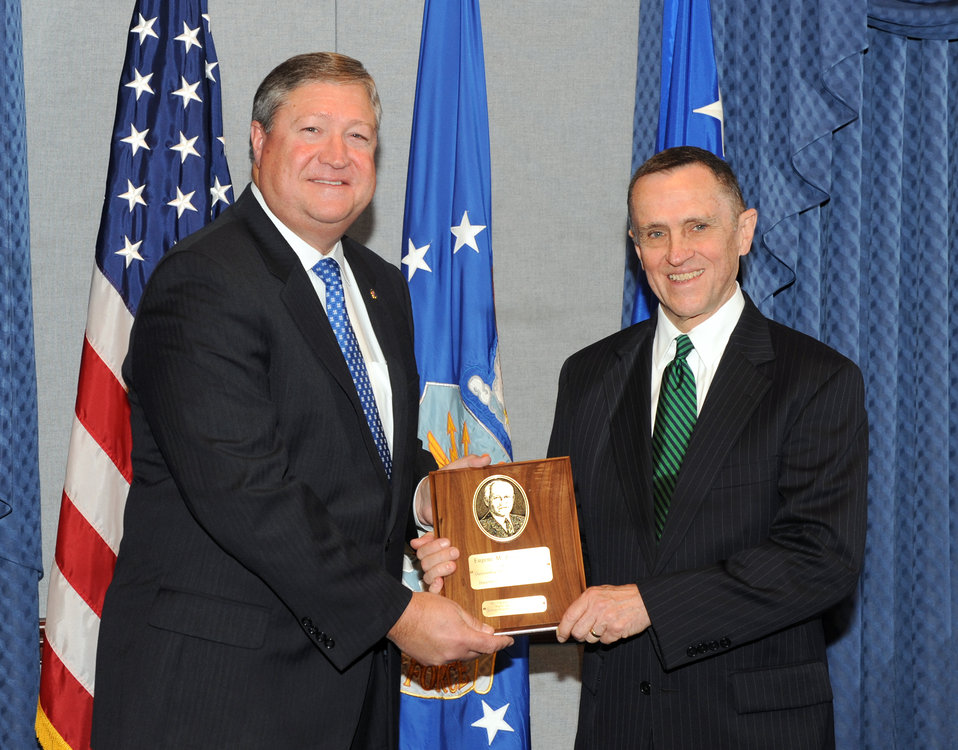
Zuckert Award

Secretary of the Air Force Michael Donley presents the 2010 Eugene M. Zuckert Management Award to Charles Henderson during a ceremony in the Pentagon, June 29, 2011.